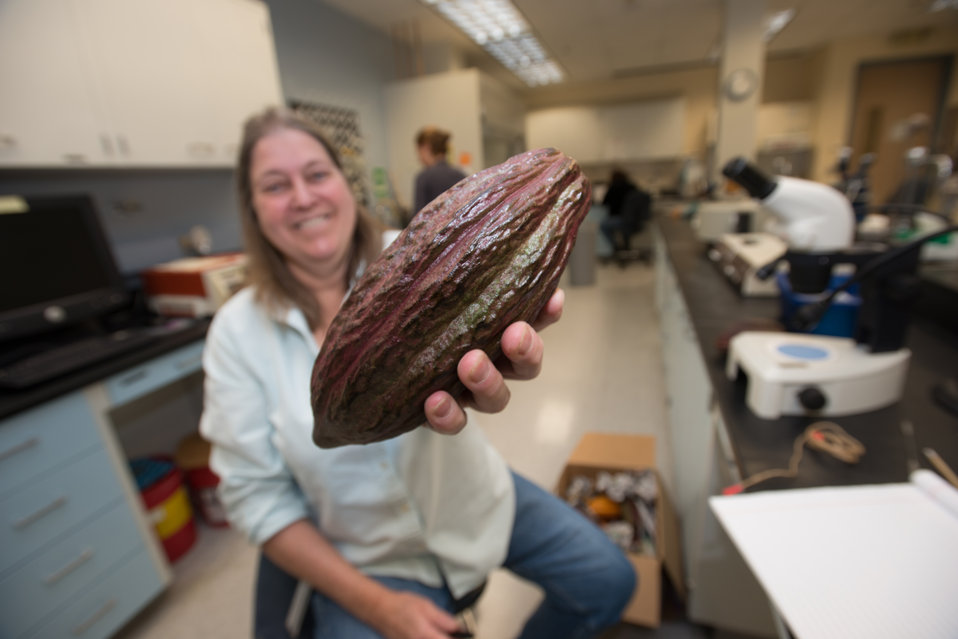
U.S. Department of Agriculture (USDA), Agriculture Research Service (ARS), National Center for Genetic Resources Preservation (NCGRP), Plant Germplasm Preservation Research Unit (PGPRU), Plant Physiologist Jennifer Crane talks about her biophysics seed quality work on cacao fruit at Ft. Collins, CO, on Wednesday, Nov. 6, 2013.